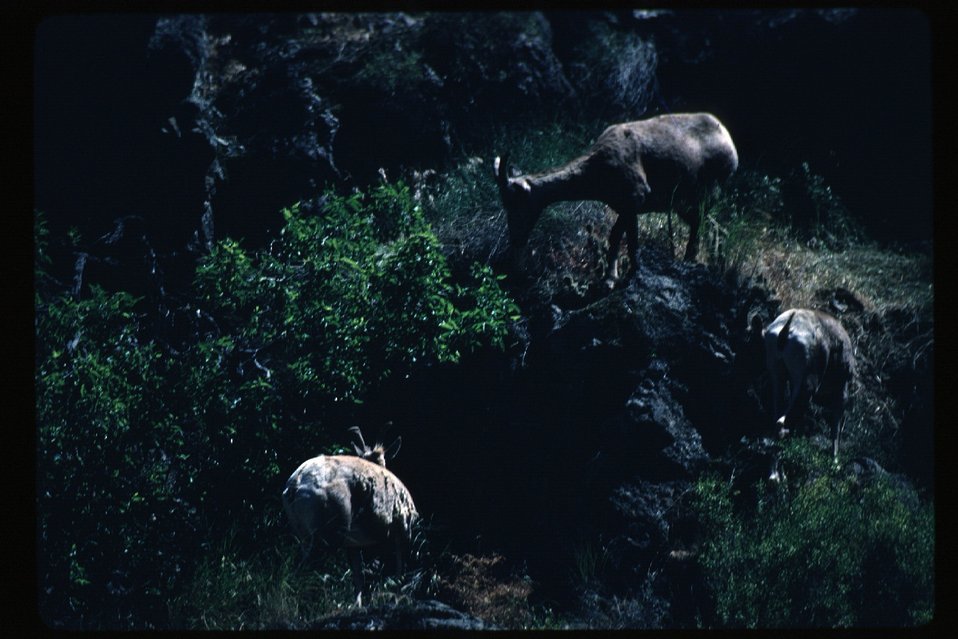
Bighorn sheep UCSC Upper Columbia Salmon Clearwater District